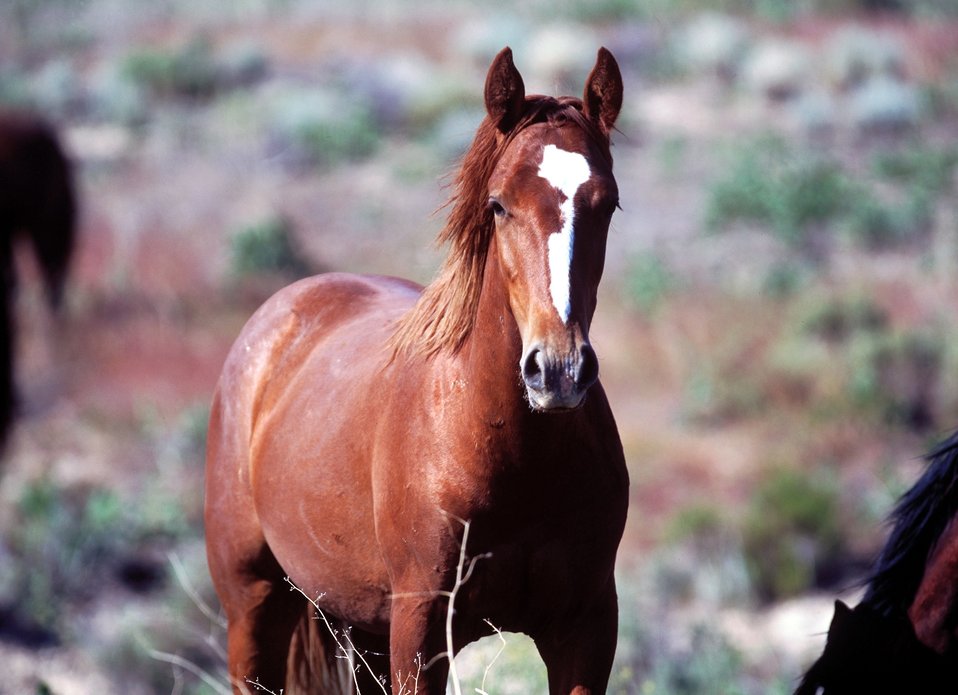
Onaqui Herd near Dugway, Utah.